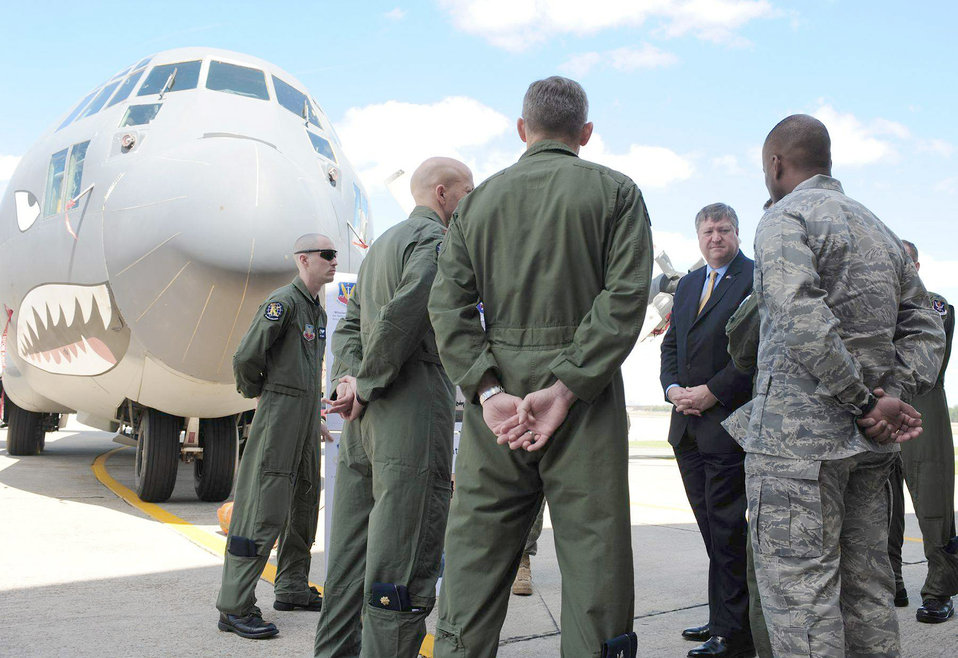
SecAF at Moody AFB

Secretary of the Air Force Michael Donley is briefed on the mission of the HC-130P King by members of the 71st Rescue Squadron March 8, 2011, at Moody Air Force Base, Ga.